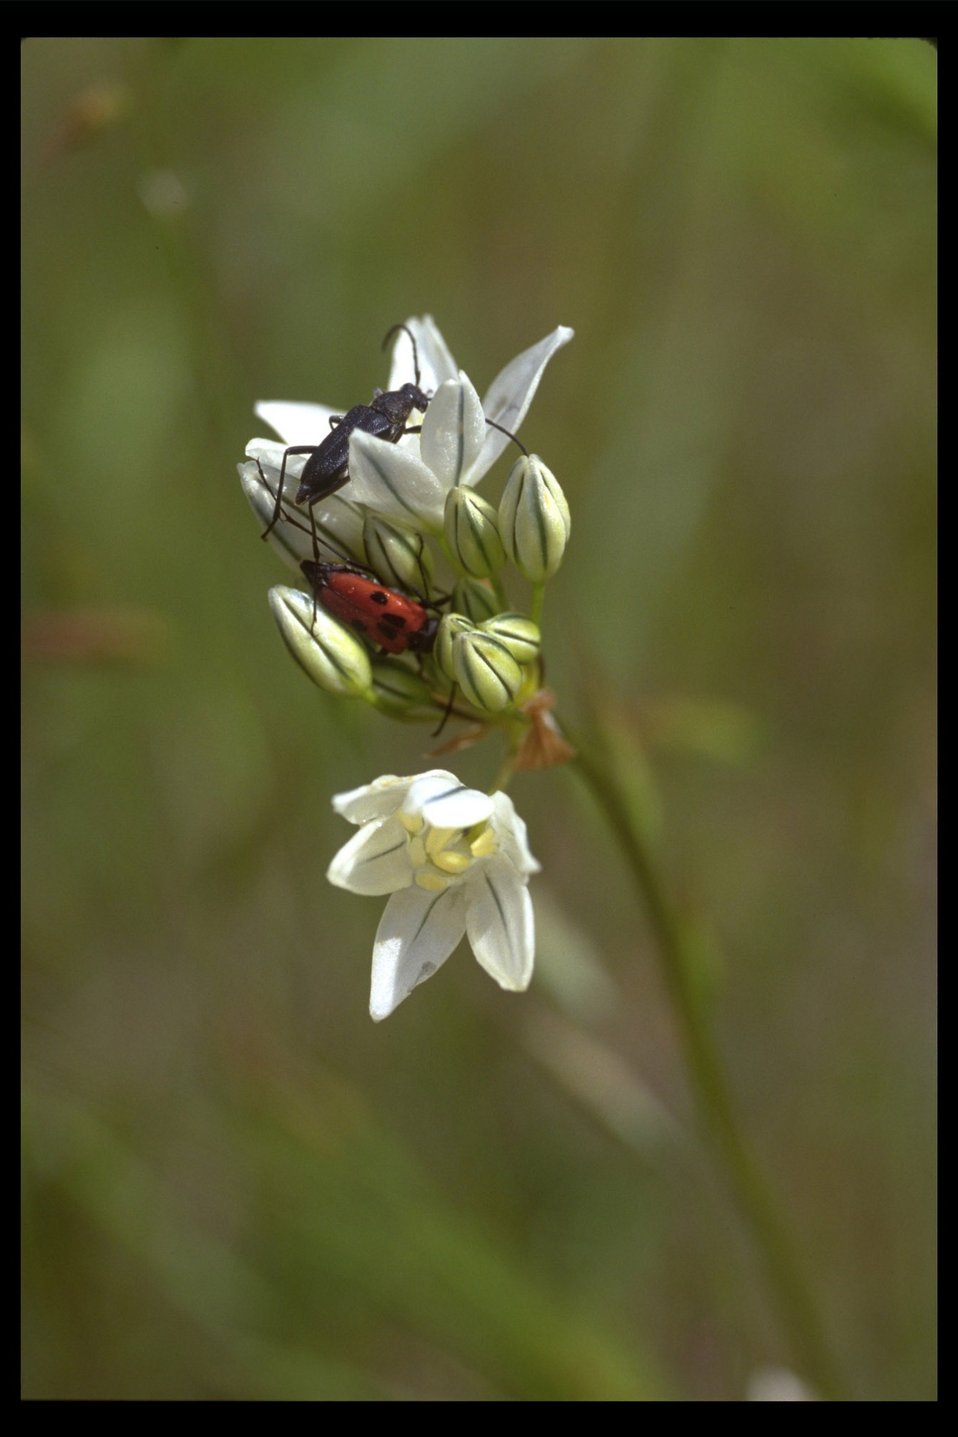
Close up of blossom with beetles on board of a White Hyacinth, White Brodiaea (Trieleia hyacinthina) near Trail, OR.